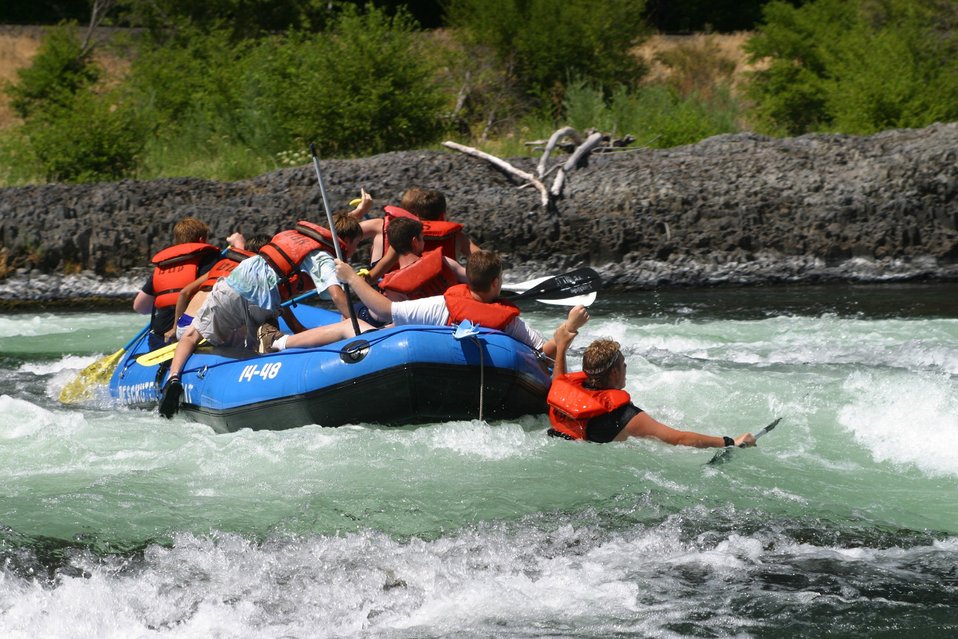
Oak Springs is a Class IV Rapids. The left channel has shallow rocks, large standing waves, turbulent currents and a large hole during high flows. The right channel has a large hole, shallow rocks, and turbulent currents. 7/26/03 Pelton Dam 3600 cfs: Moody Rapids 4300 cfs.